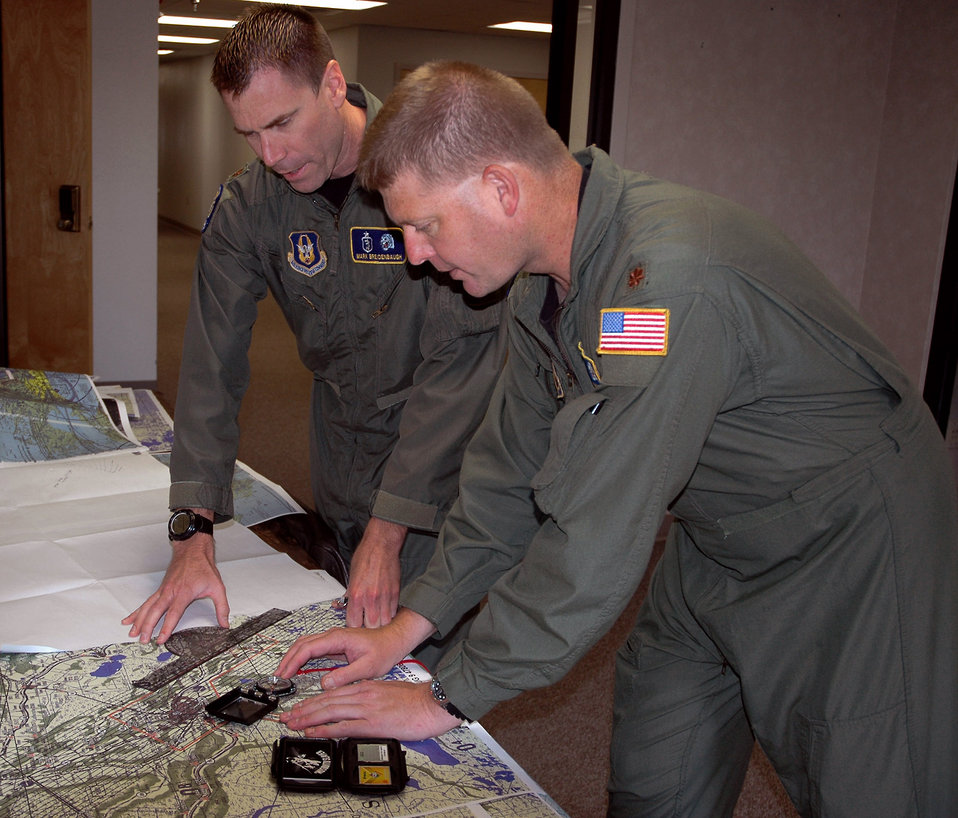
Ohio reservists complete aerial spray mission in Louisiana

Majs. Mark Breidenbaugh (left) and Karl Haagsma discuss areas to be aerial sprayed over Terrebonne Parish, La. Their duties include identifying pests and areas to be aerial sprayed, prescribing correct treatment rates and flying on spray missions to ensure proper pesticide application. Majors Breidenbaugh and Haagsma are medical entomologists with Air Force Reserve Command's 910th Airlift Wing at Youngstown Air Reserve Station, Ohio.